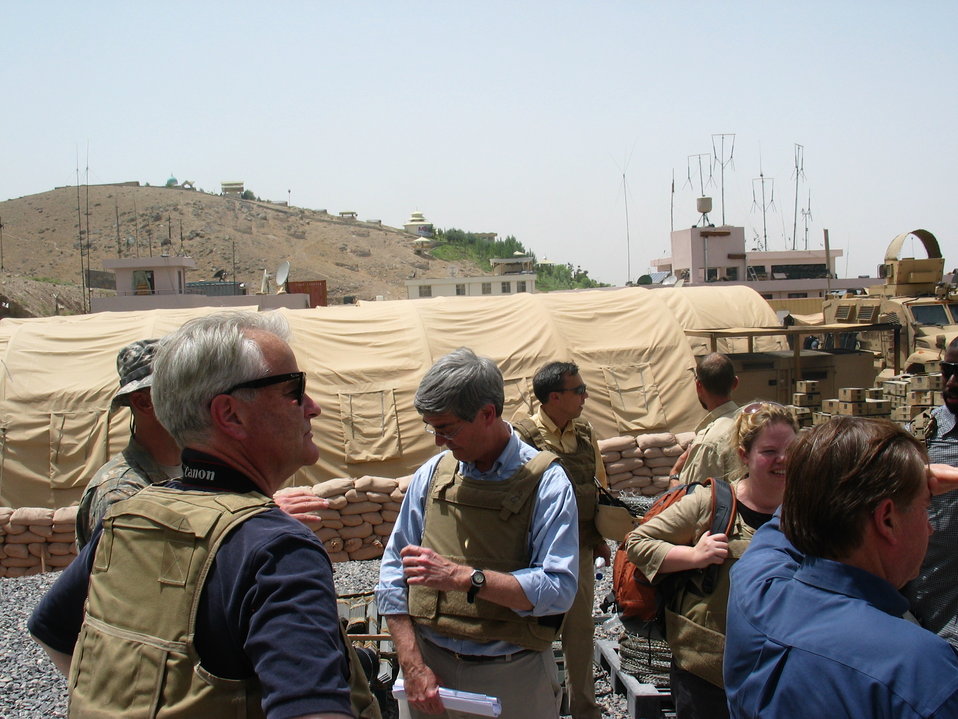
CODEL Berman